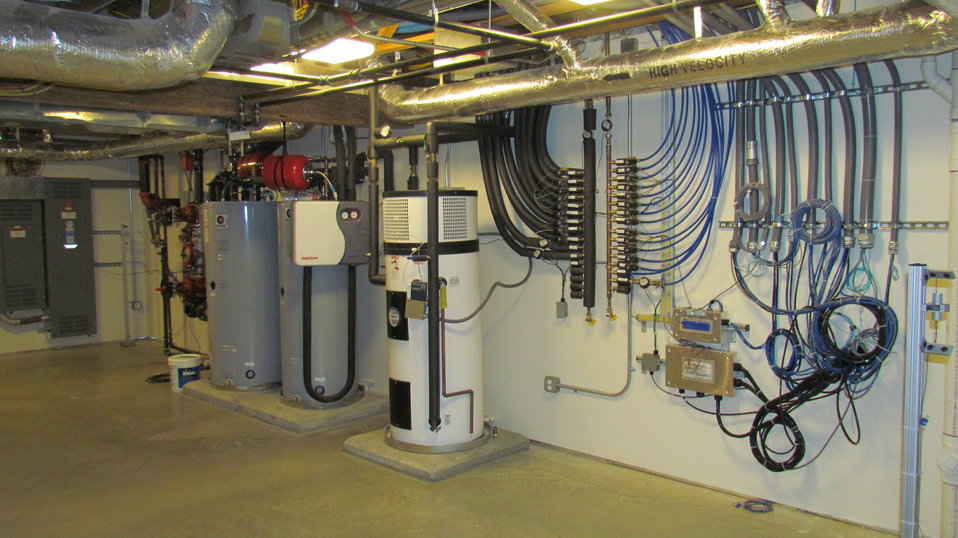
West side of basement showing solar storage tanks, heat pump water heater, and plumbing distribution system.